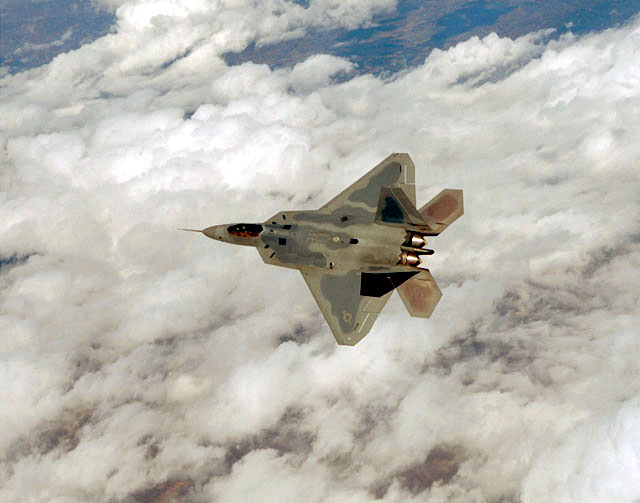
Lone Raptor

FILE PHOTO -- The F/A-22 is an air-superiority fighter with improved capability over current Air Force aircraft. From the inception of the battle, the F/A-22's primary objective will be to establish air superiority through the conduct of counter air operations. The F/A-22 also has an inherent air-to-surface capability. A combination of improved sensor capability, improved situational awareness, and improved weapons provides first-kill opportunity against the threat.